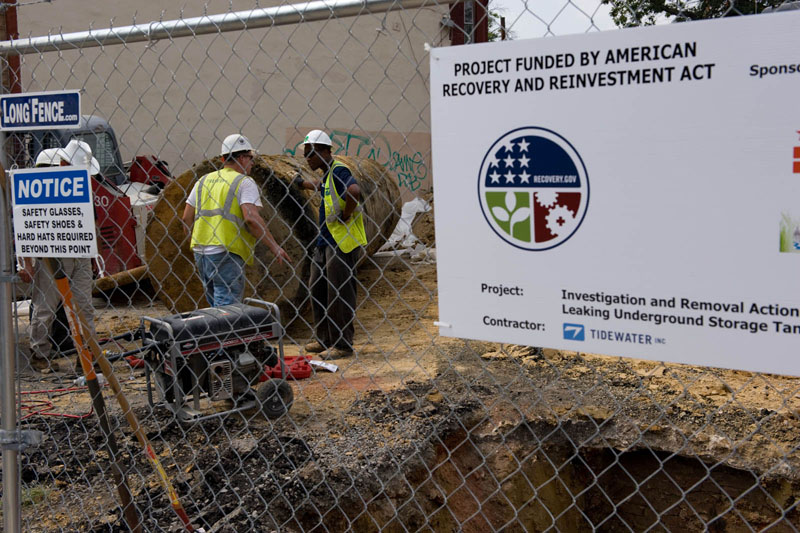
Old leaking underground gasoline tank removed from closed gas station Washington, DC 2010 USEPA photo by Eric Vance